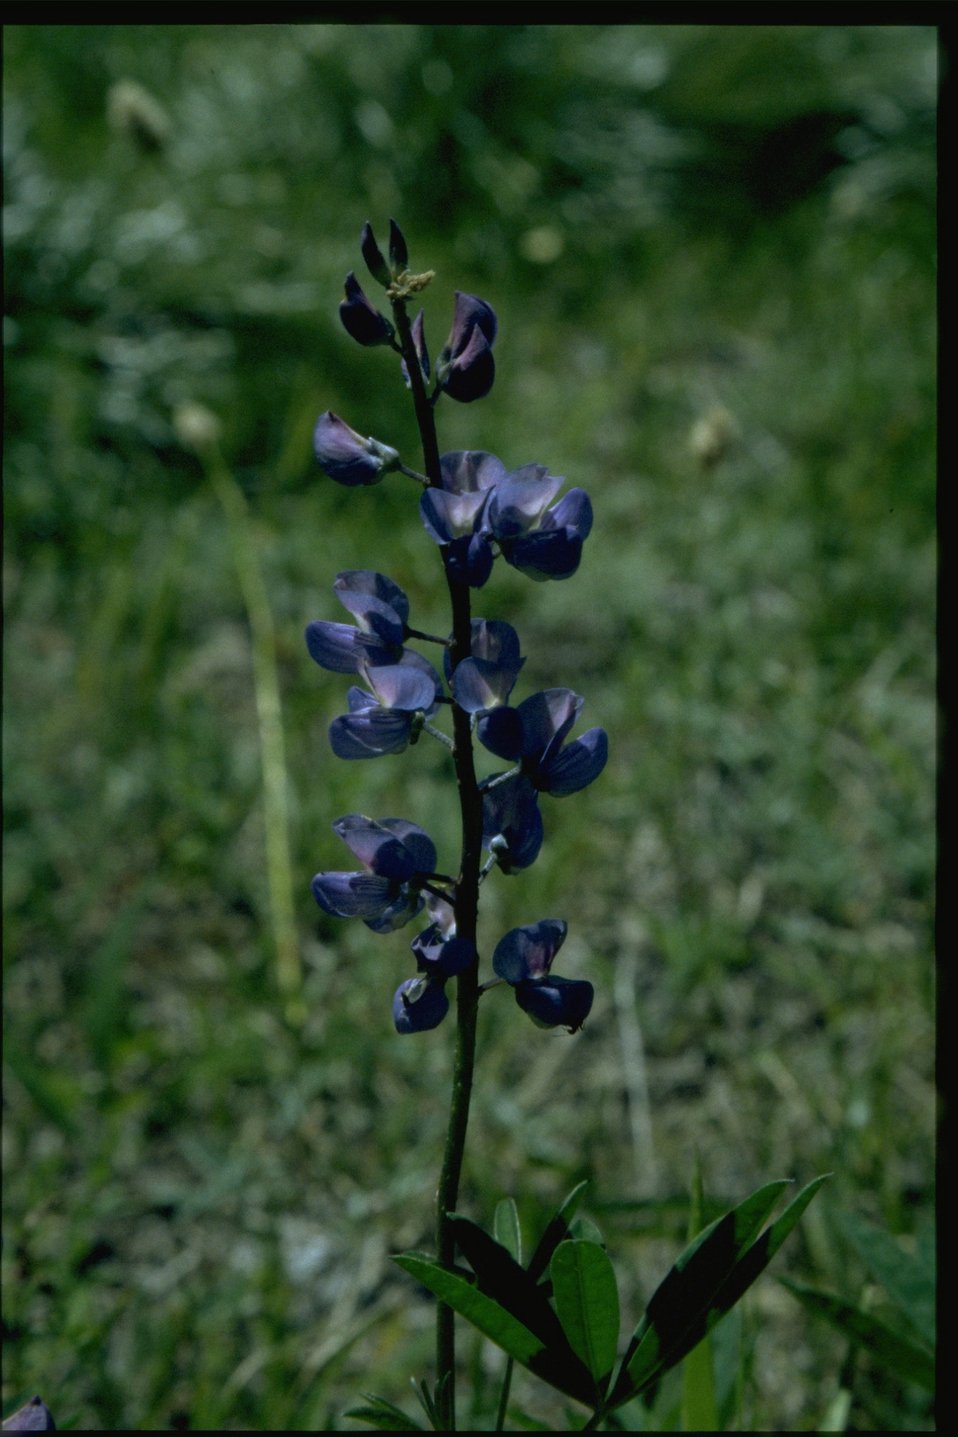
Medium shot of Lupinus arcticus.